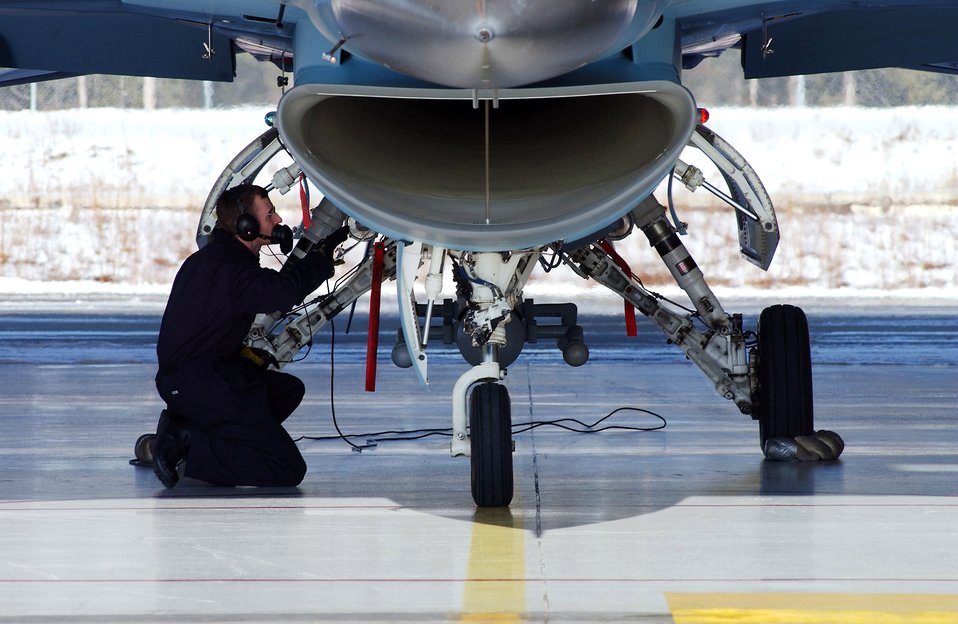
Opposing force check

Airman 1st Class Clinton Gessler checks the landing gear on an F-16 Fighting Falcon April 11 at Eielson Air Force Base, Alaska. During Red Flag-Alaska, the 18th Aggressor Squadron's F-16s act as the opposing force while engaging in aerial combat.